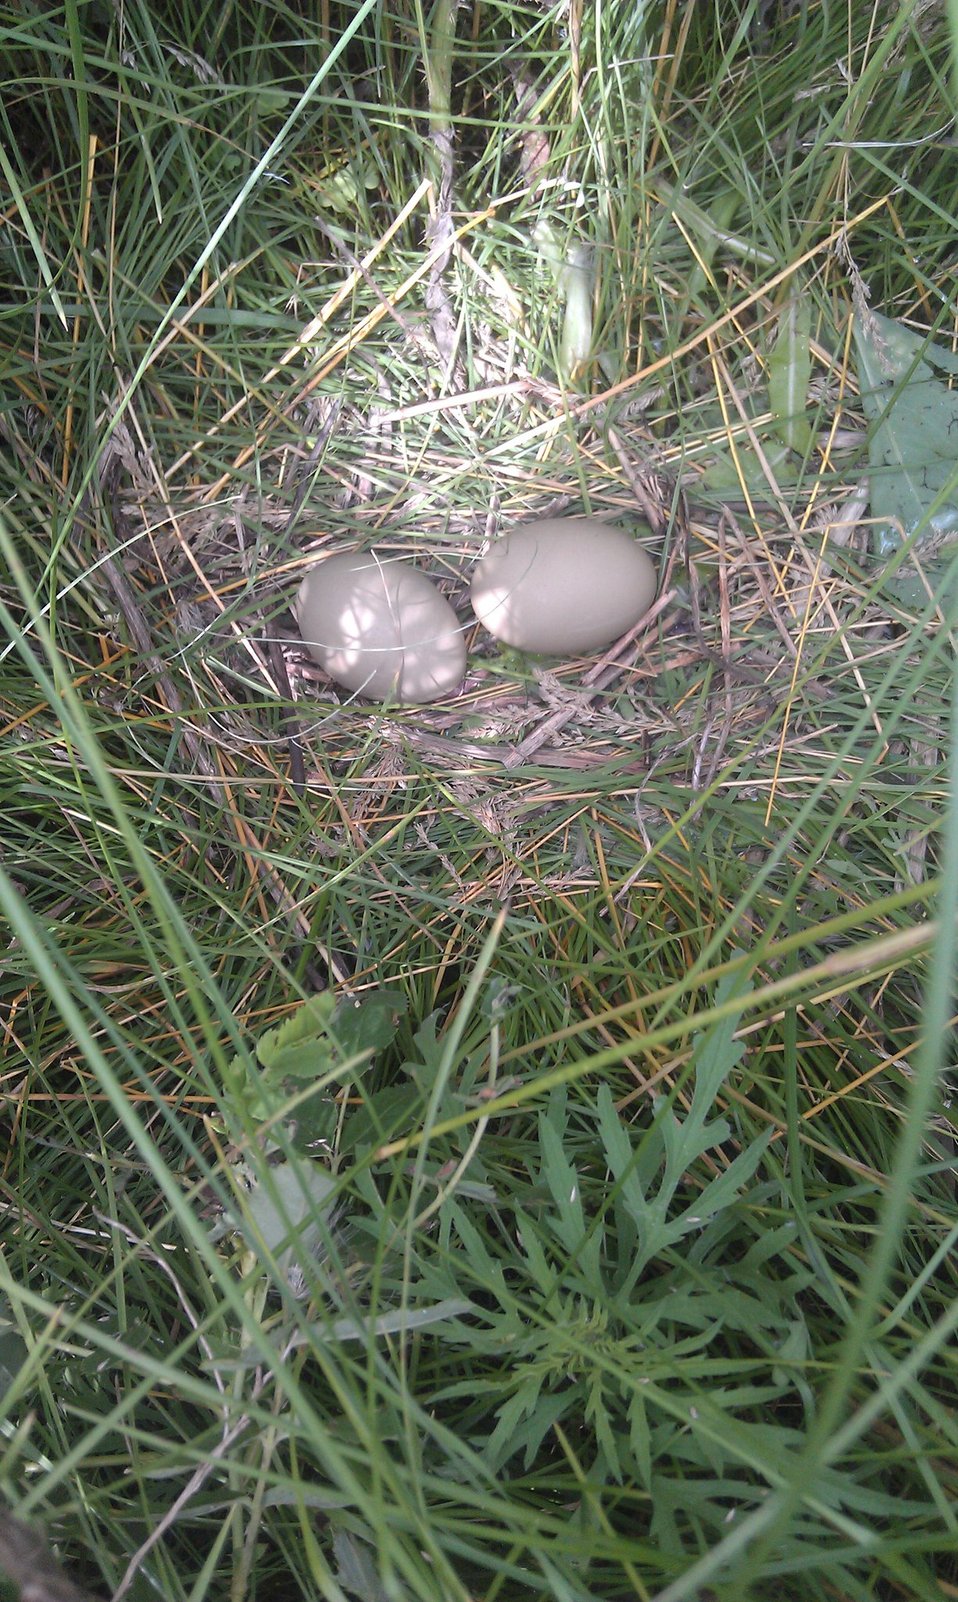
American Bittern Nest

Interesting find by seasonal staff.